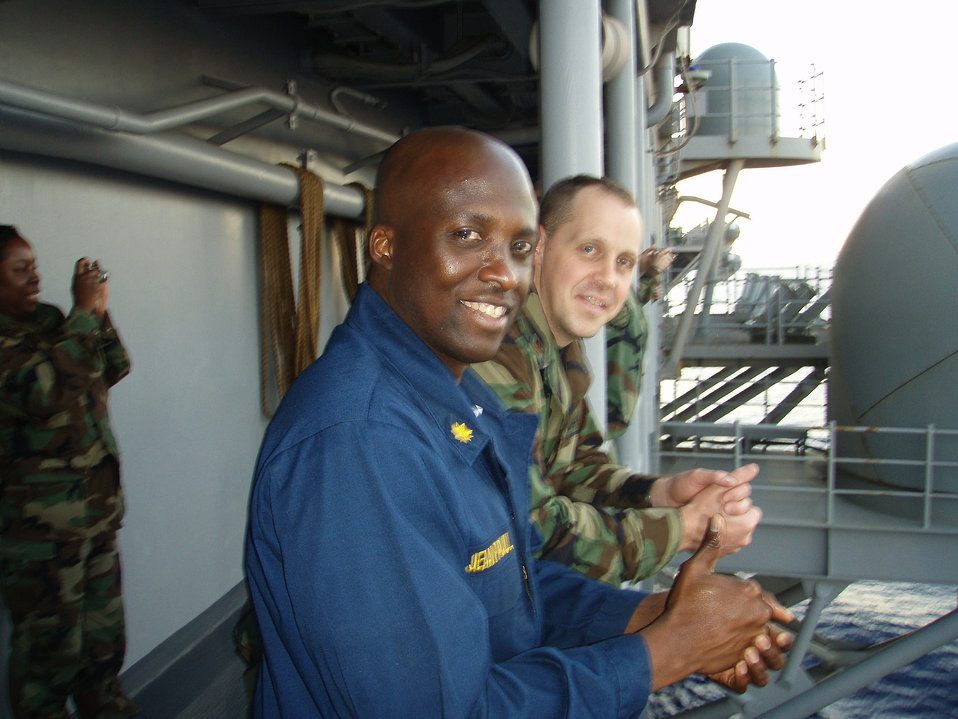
Photographed by U.S. Public Health Service (USPHS) Lt. Cmdr. Gary Brunette while aboard the aircraft carrier, USS Bataan, during Caribbean Operation Unified Response, this image depicted fellow USPHS corpsmen, Lt. Cmdr. Jean Paul Mivoyel, and Lt. Cmdr. Trent LeCoultre, on the carrier's deck during this Caribbean deployment.